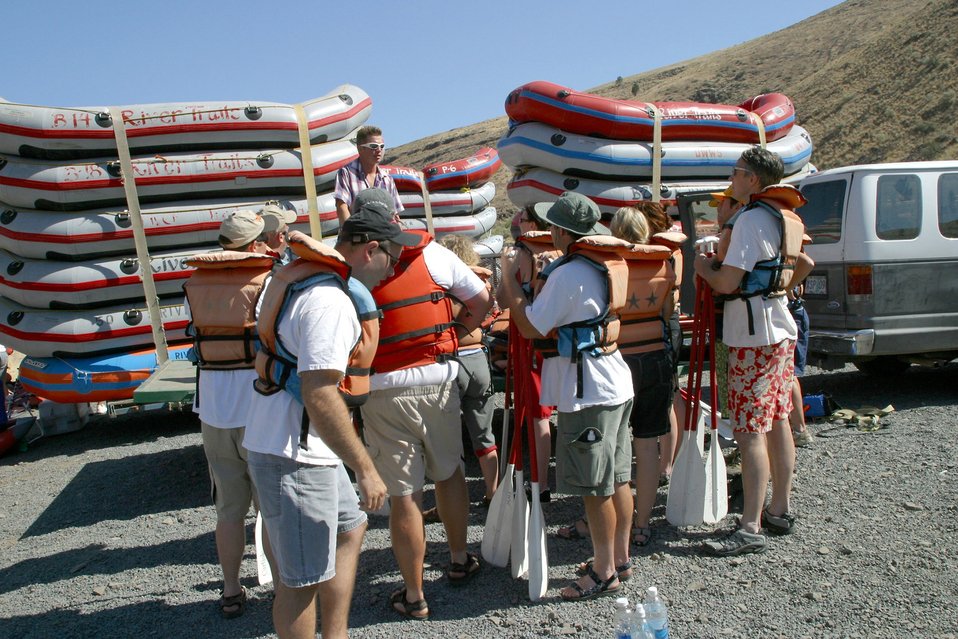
Commercial operators give clients safety briefings before leaving the Harpham Flat boat ramp.